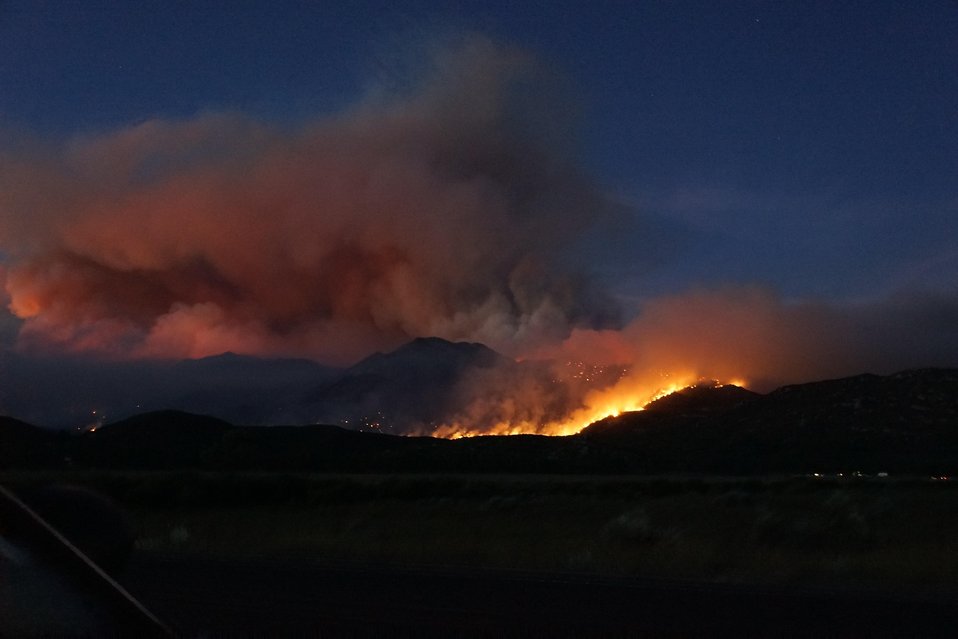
Mountain Fire in the San Bernardino National Forest in California began on Jul. 15, 2013 and its cause is under investigation. The fire has consumed approximately 27, 332 acres. The fire is approximately 85 % contained.